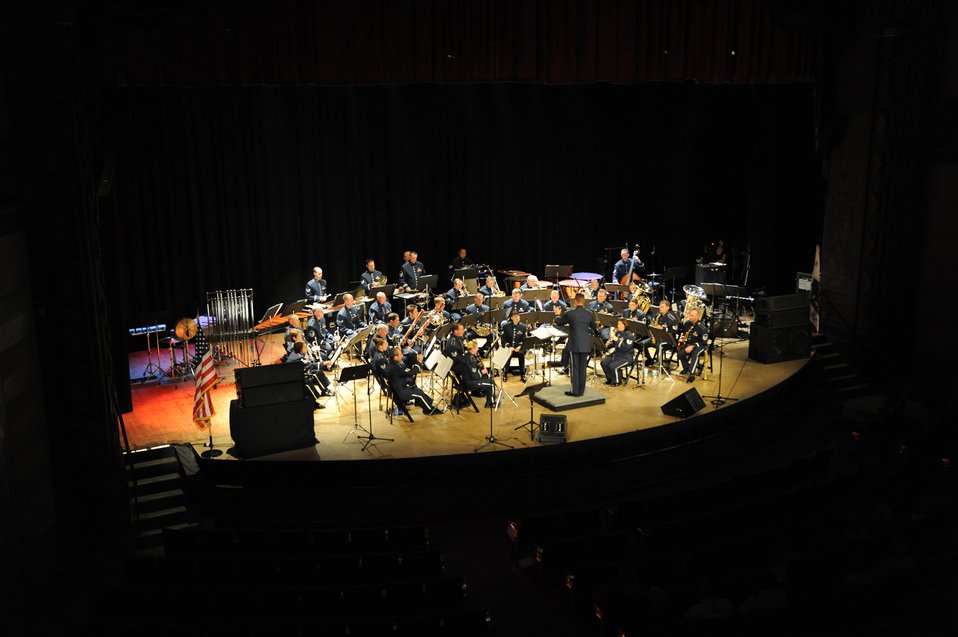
Band of the Golden West

Members of the Band of the Golden West perform at the Warner Grand Theatre, San Pedro, Calif., Nov. 16. The band is performing during Air Force Week Los Angeles, an event designed to educate the local population about the Air Force's capabilities and missions through various activities and exhibitions in the Los Angeles area. It provides an up close and personal look at the men and women of the Air Force serving worldwide in the defense of freedom. Air Force Week Los Angeles runs Nov. 14-21.